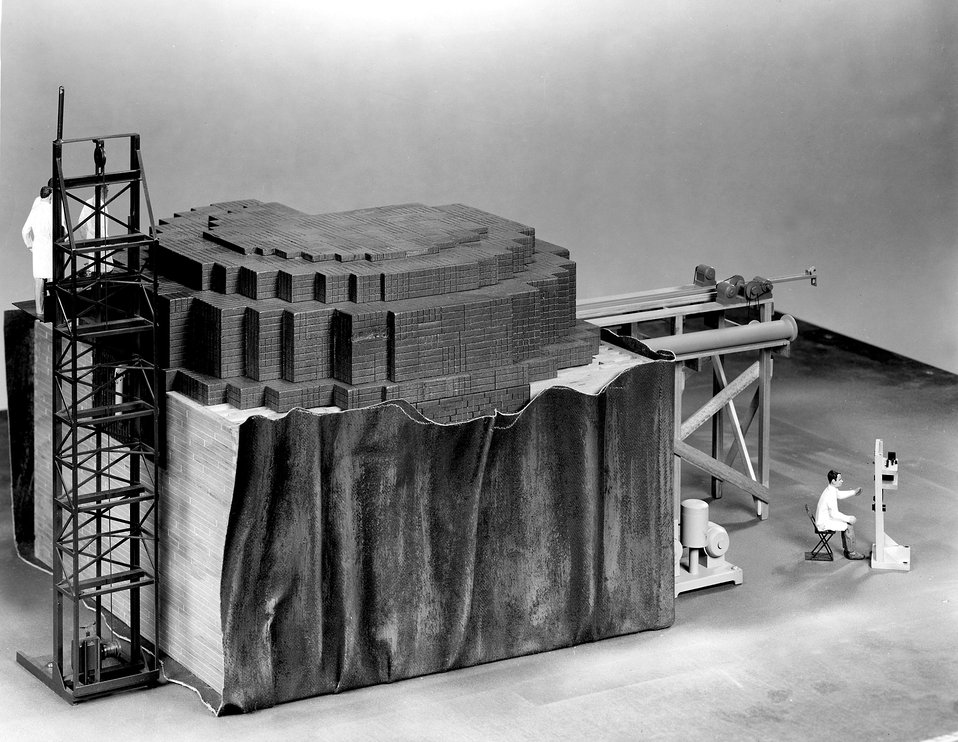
Closeup of scale model (1/2 in. = 1ft.) of CP-1 reactor temporarily removed from its West Stands racquets court environment..